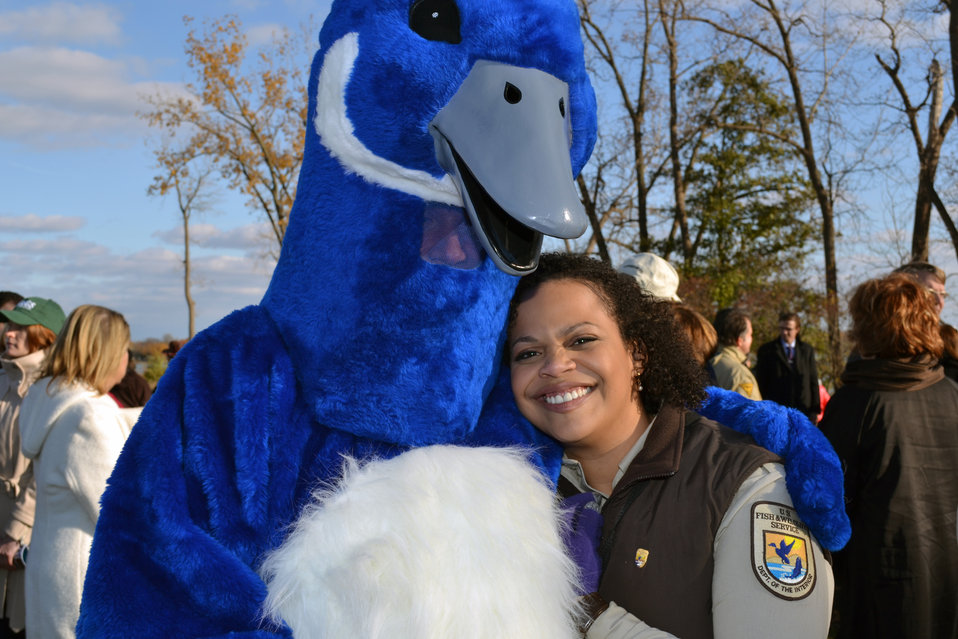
JamieLanier BlueGoose

Detroit River International Wildlife Refuge groundbreaking celebration.